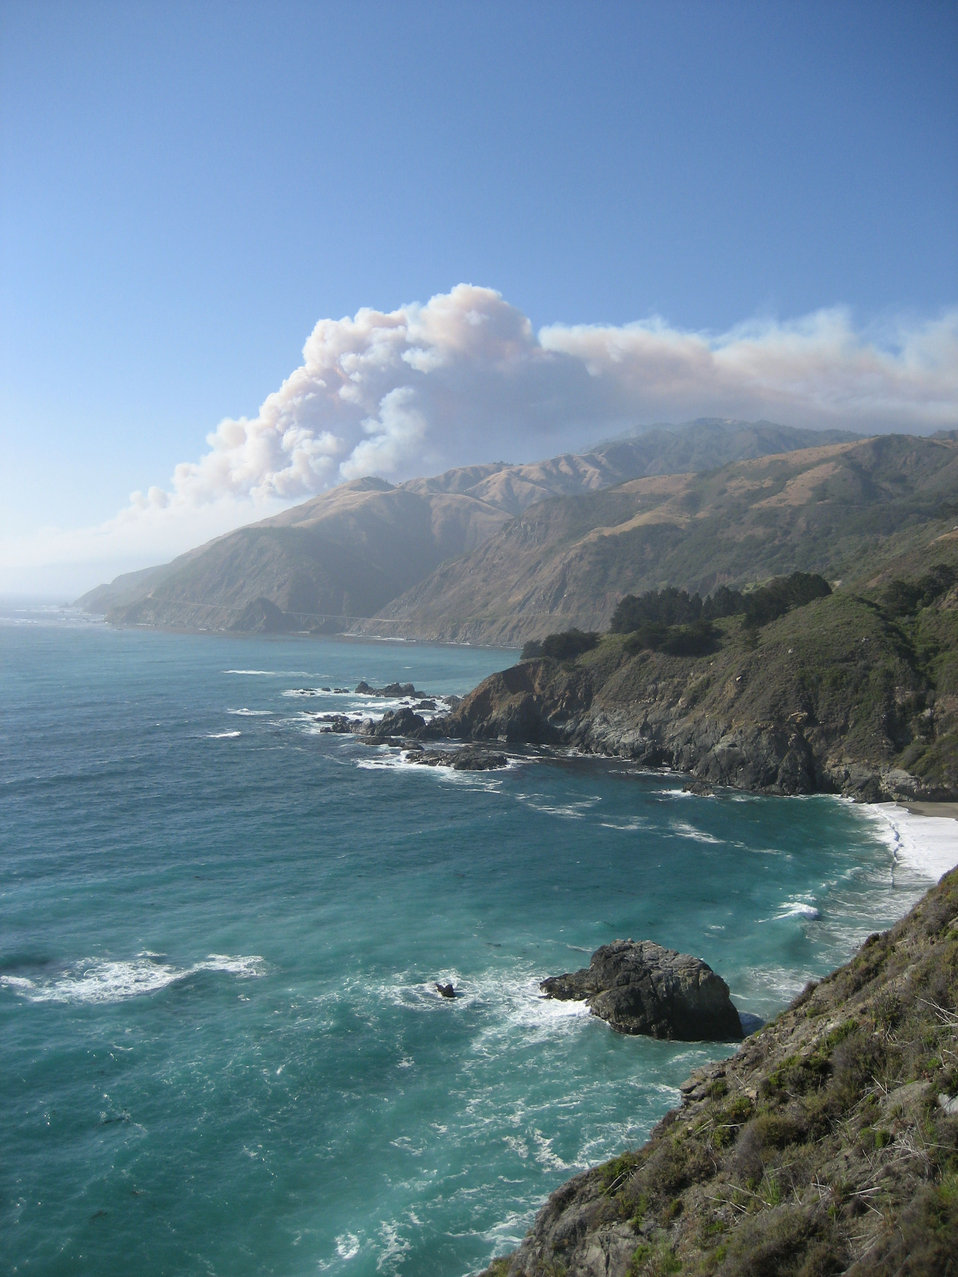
Big Sur from Nacimiento Fergusson Road, in Monterey County, CA, on June 22, 2008.